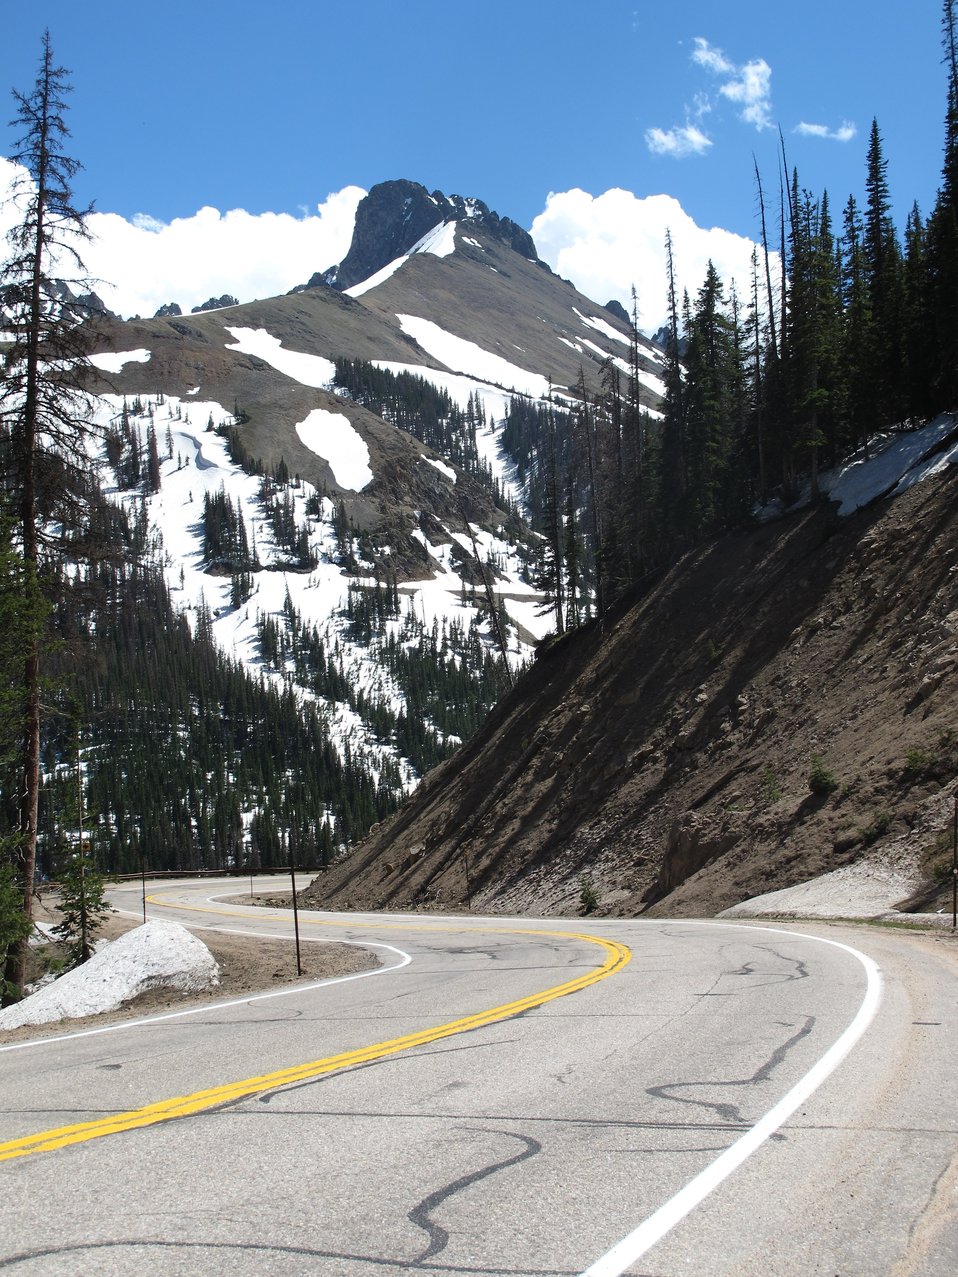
The road down the west side of Cameron Pass with the Crags overlooking the switchbacks on the Highway 14. Also known as Nokhu Crags.